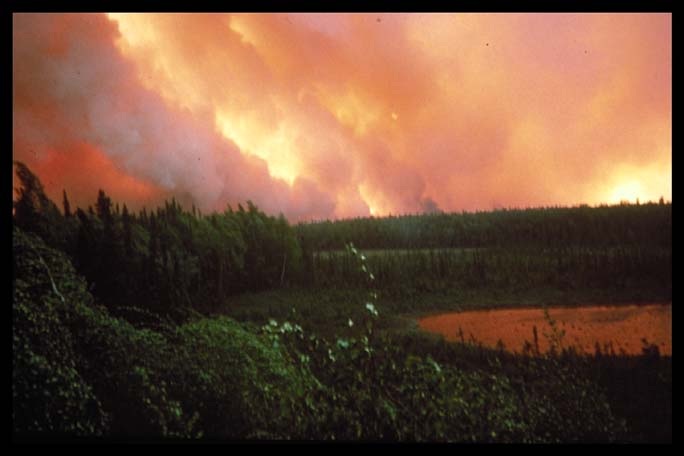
Wildland fire